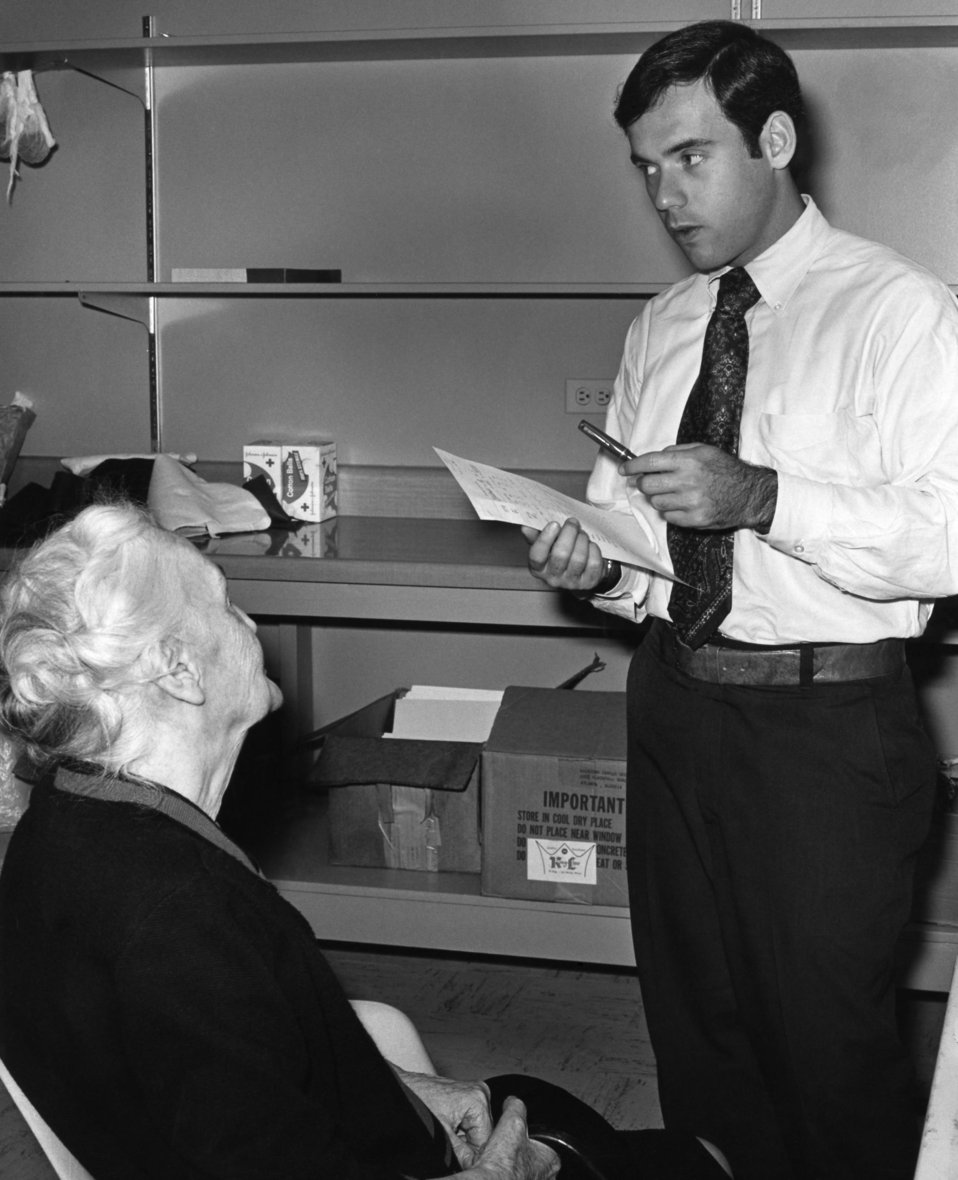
This 1976 photograph showed a public health professional consulting with an elderly woman during the swine flu nationwide vaccination campaign, which was instituted in October, 1976, due to an outbreak at Fort Dix, New Jersey.